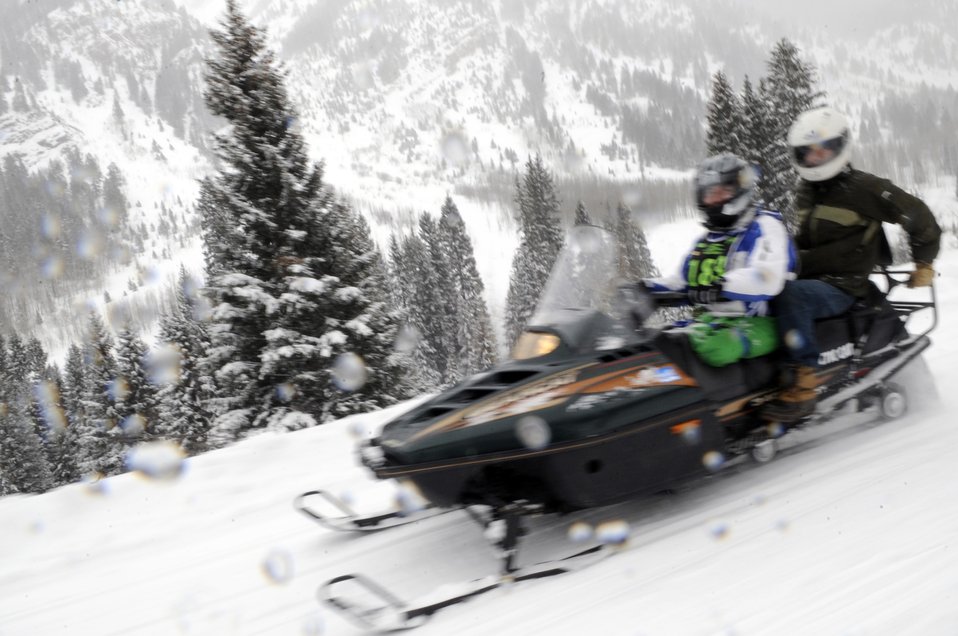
23rd National Disabled American Veterans Winter Sports Clinic

Senior Airman Kevin Krogh drives a snowmobile Apr. 1 during the 23rd National Disabled American Veterans Winter Sports Clinic in Snowmass Village, Colo. Airman Krogh lost both legs in a major car accident in 2007 and this is his first year attending the sports clinic. Airman Krogh is assigned to Fort Sam Houston in San Antonio.